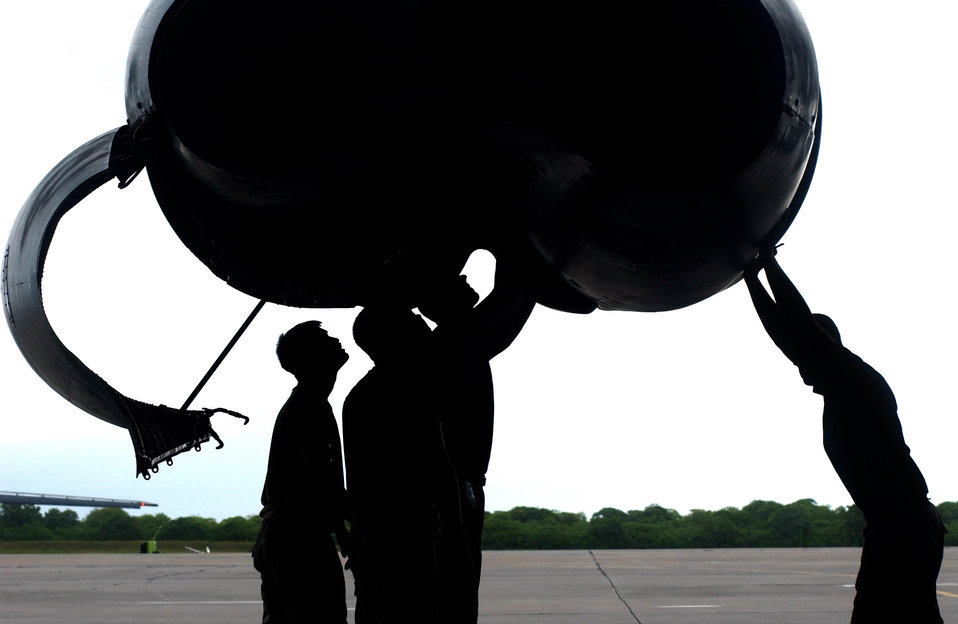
Engine six

OPERATION ENDURING FREEDOM -- B-52H Stratofortress crew chiefs from the 28th Air Expeditionary Wing lock in place the number six engine cover at an operating location in support of Operation Enduring Freedom. Coalition forces flew 157 sorties into Afghanistan on Dec. 9.